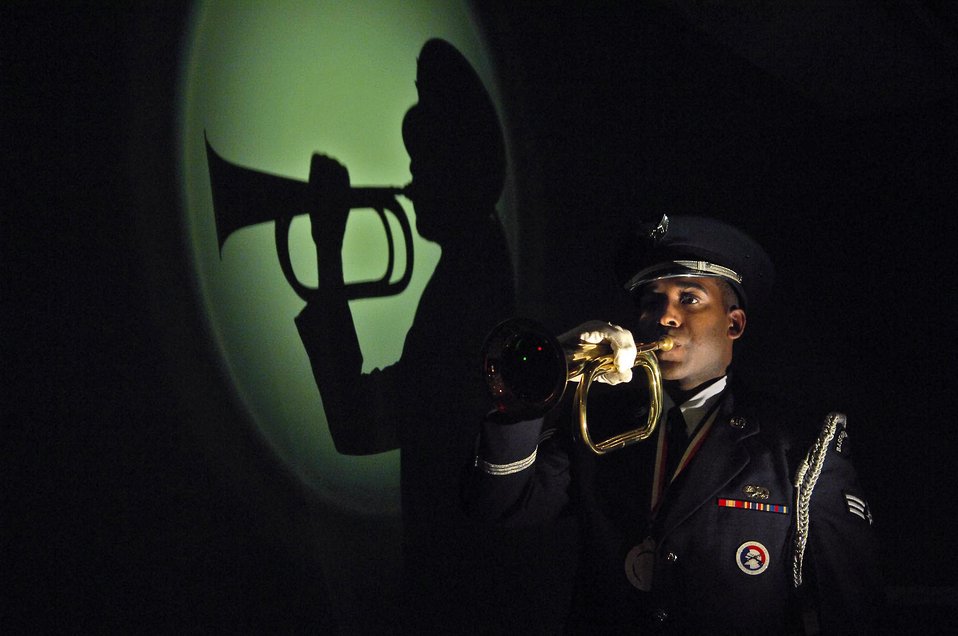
Blowing my horn

Senior Airman Alan Howard plays the bugle at the wing's annual awards banquet Jan. 26 at Shaw Air Force Base, S.C. Airman Howard is with the 20th Fighter Wing Honor Guard, and won the Ceremonial Airman of the Year award.